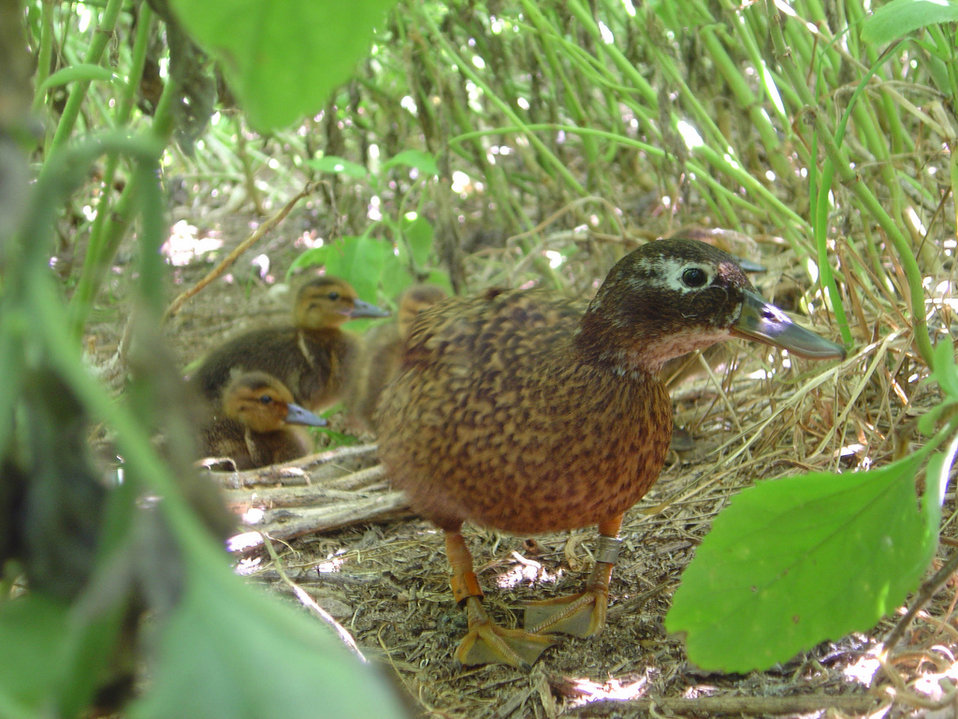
Laysan duck hen with ducklings

endangered
Midway Atoll National Wildlife Refuge, Pacific Islands